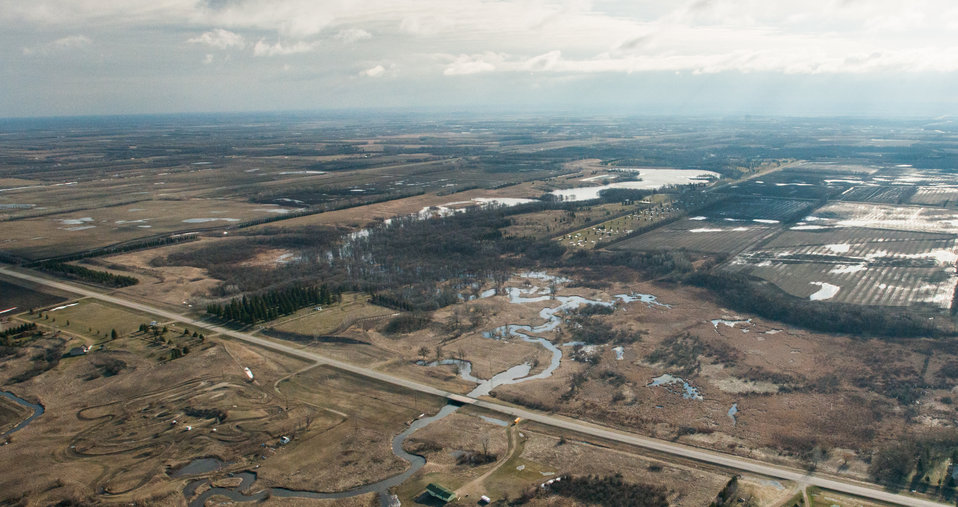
Larimore Dam, a Public Law PL83-566 Small Watershed Program, in Grand Forks County, ND, on Wednesday, May 1, 2013.